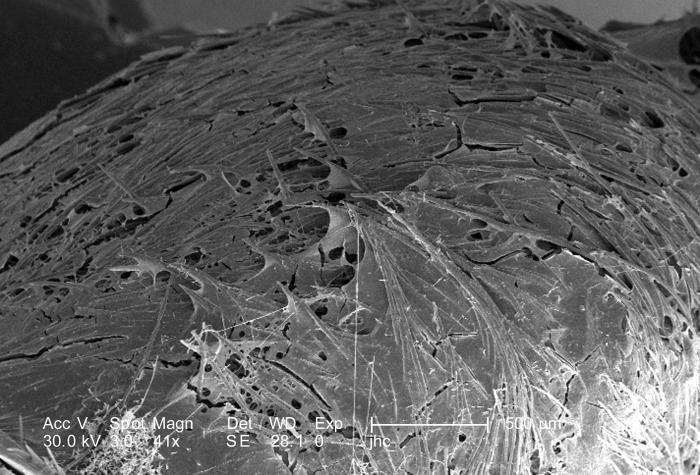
Under a magnification of 41X, this scanning electron micrograph (SEM) revealed some of the ultrastructural architecture found in a brown recluse spider's, Loxesceles reclusa, web that had entrapped an unidentified ant. Note the silken threads used to enwrap this prey, and the gluey matrix in which the threads were embedded, much like rebar and concrete.